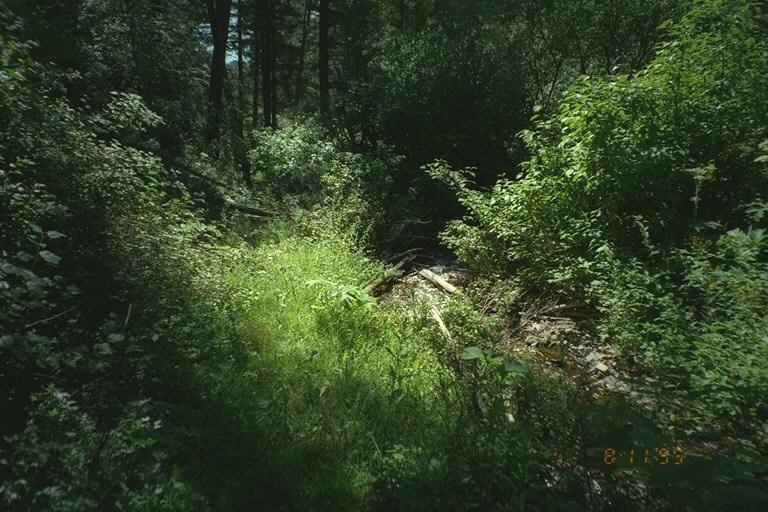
Riparian area Public Lands Salmon Field Office UCSC Upper Columbia Salmon Clearwater District